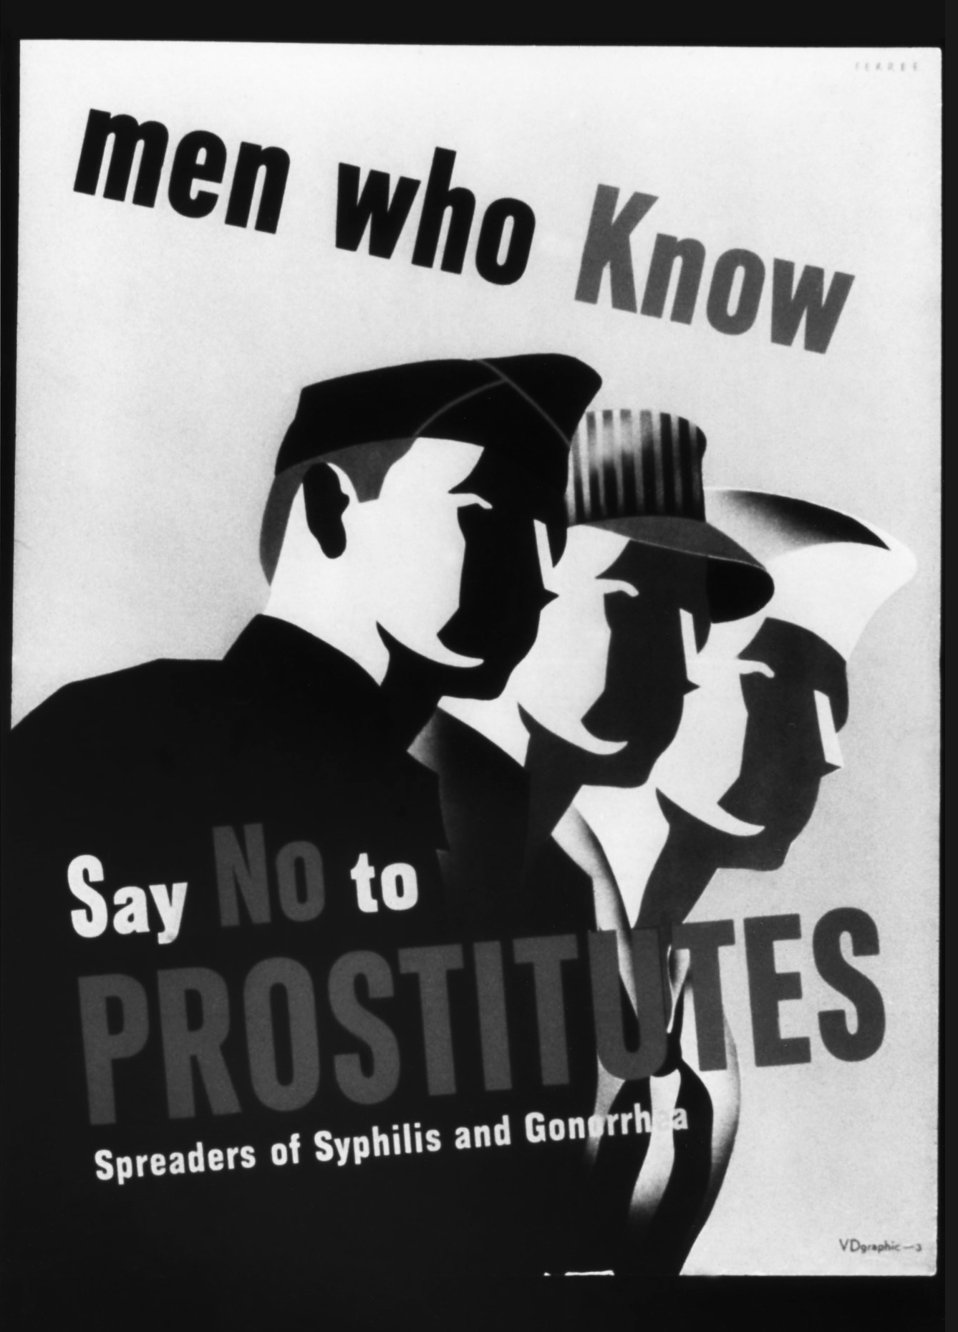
This 1940 wartime poster urged servicemen to 'say No' to prostitution, in order to help in the reduction of venereal disease cases among soldiers during World War II.